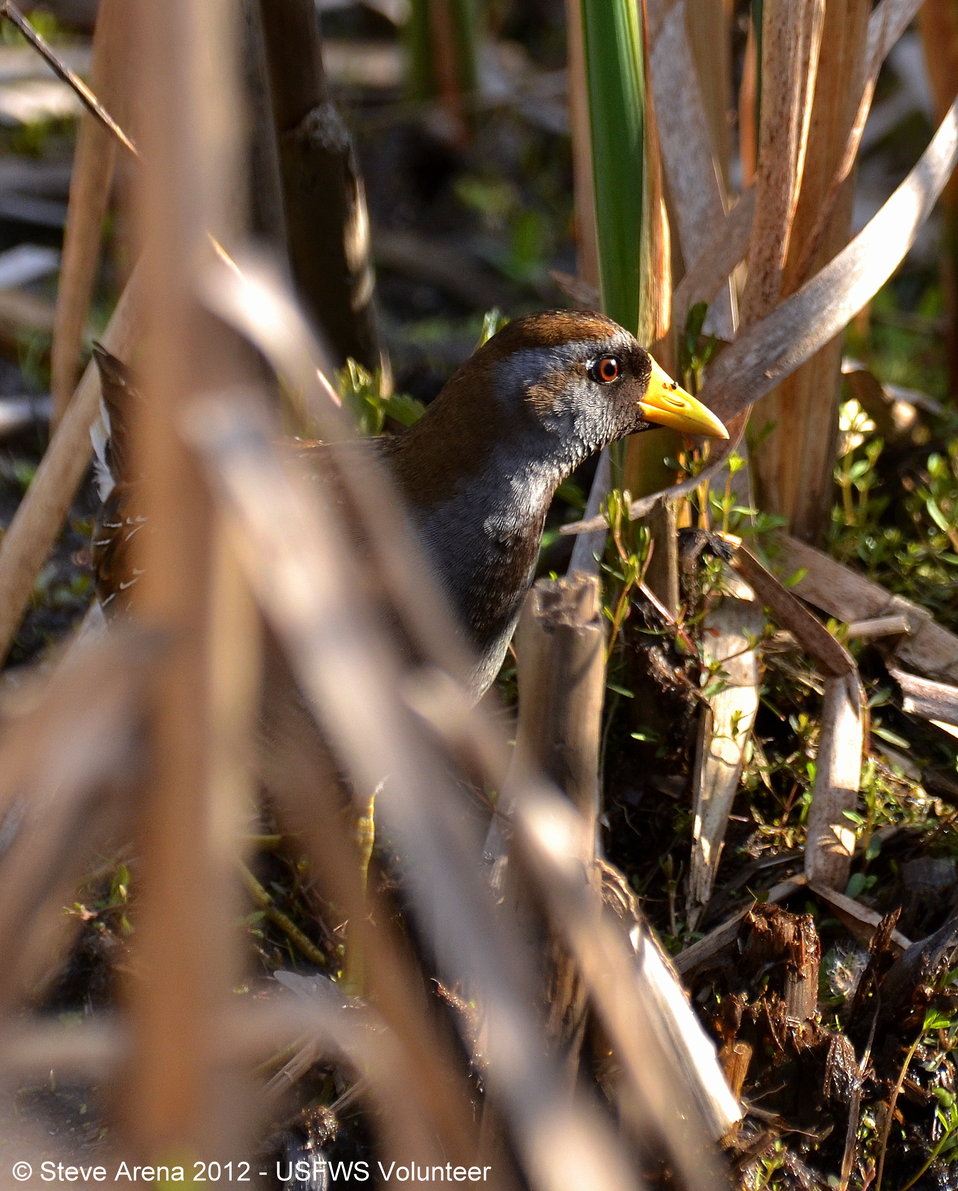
Sora (Porzana carolina) Upper Pool during Marshbird Survey Scouting 28 April 2012

Sora at Great Meadows National Wildlife Refuge.